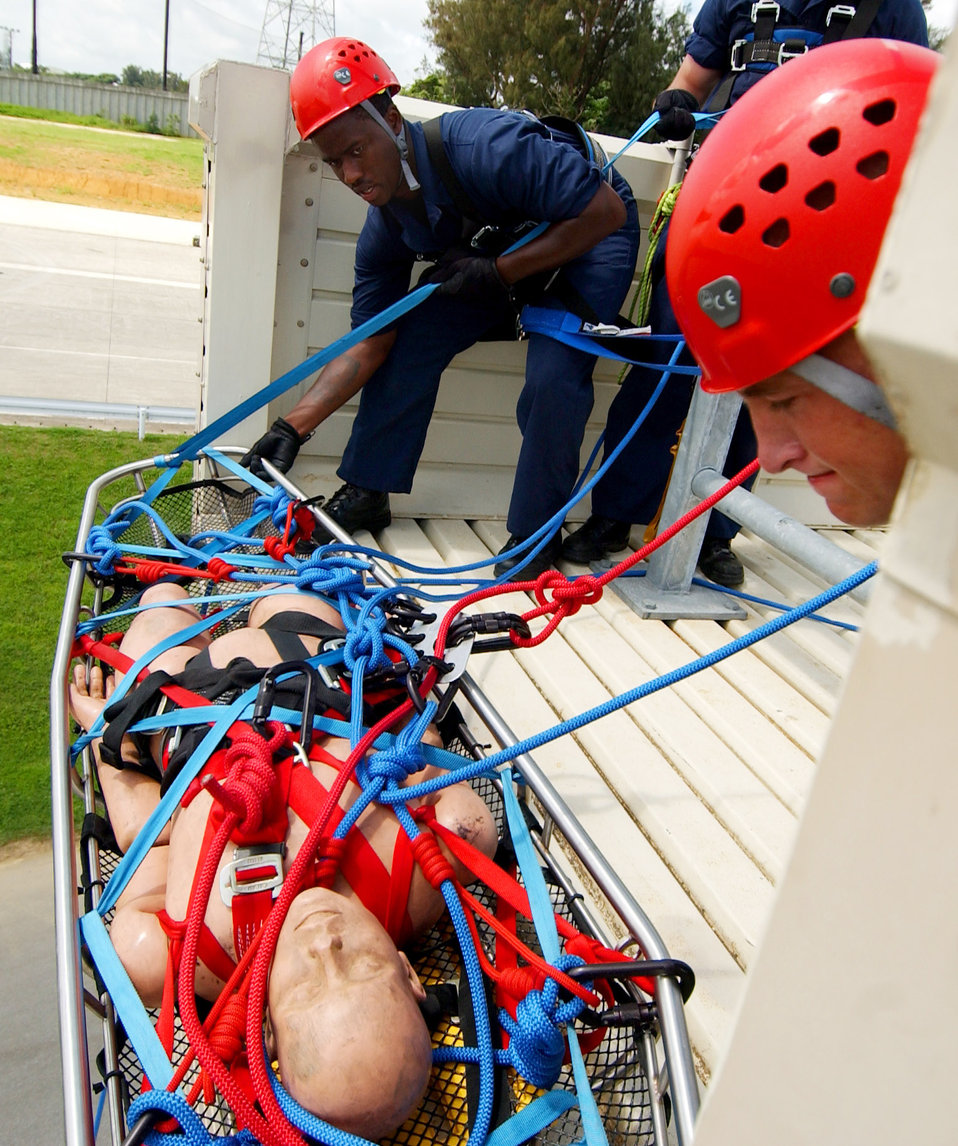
Saving lives, money

Senior Airman Brett Williams and Senior Airman Derek White lower a simulated injured victim during the Rescue I course provided by Detachment 1, 554th Rescue Squadron here June 17. Airman Williams is assigned to the 3rd Civil Engineer Squadron at Elmendorf Air Force Base, Alaska. Airman White is assigned to the 18th Civil Engineer Squadron at Kadena Air Base, Japan.